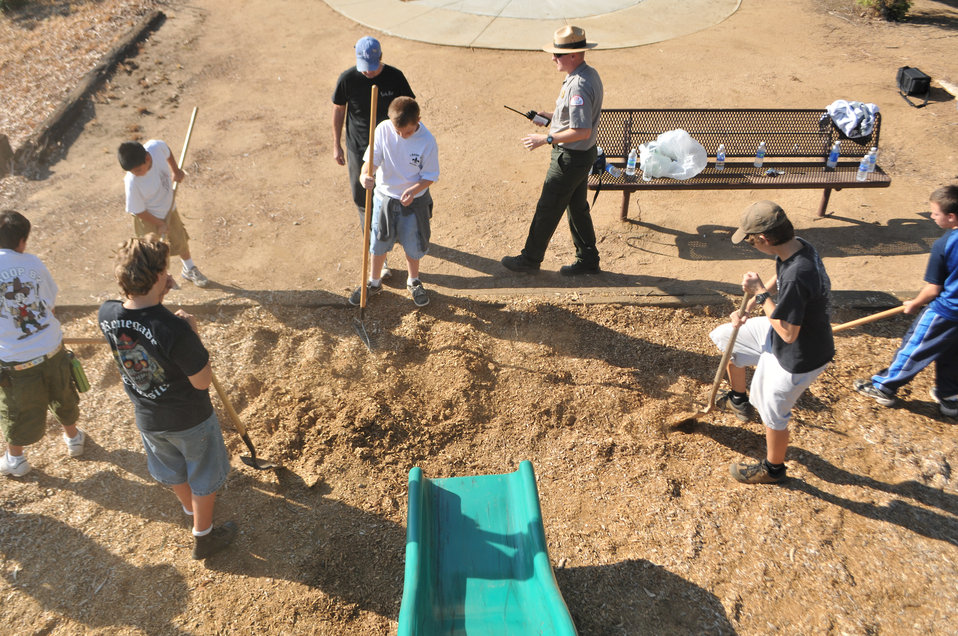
HENSLEY LAKE, Calif. (Sept. 25, 2010) – Hensley Lake park ranger Morgan Barnes (center) checks in on National Public Lands Day volunteers grooming safety bark at one of Hensley’s public playgrounds here Sept. 25. More than 110 volunteers helped Hensley staff remove litter, repair trail erosion, clean the swimming beach and paint and clean signs throughout the park.